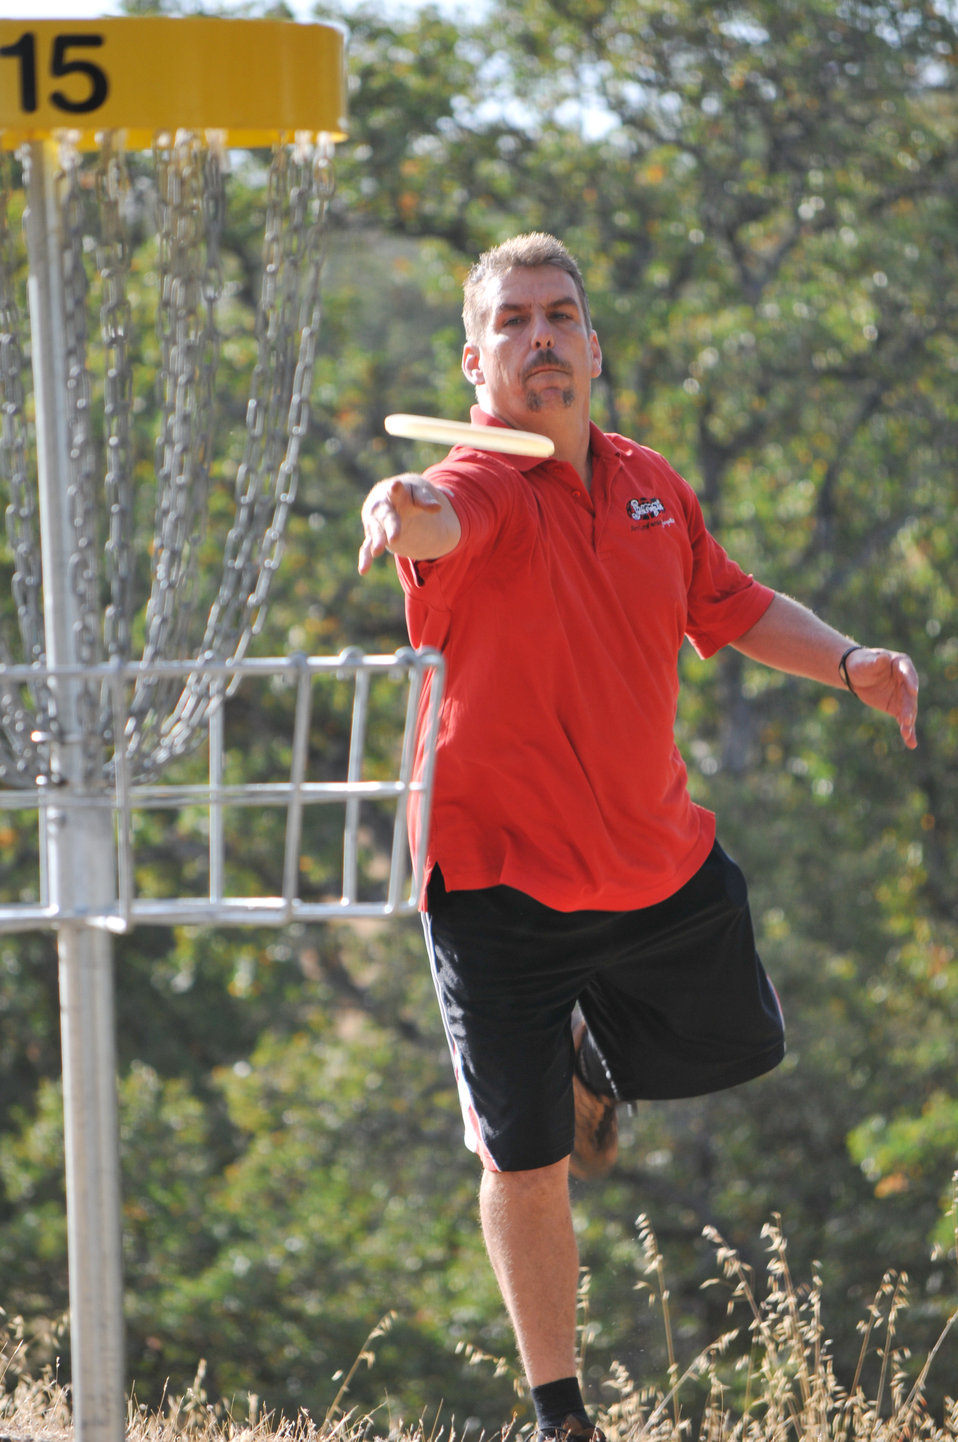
BLACK BUTTE LAKE, Calif. (Oct. 18, 2010) -- A disc golfer putts during the Professional Disc Golf Association's Norcal Series Championships here Oct. 16. The U.S. Army Corps of Engineers Sacramento District’s Black Butte hosted the tournament Oct. 15-17 at its new disc golf course, built on park lands by The Orland Aces disc golf club under a partnership with the Corps. More than 150 disc golfers from as far as Texas competed in the tournament.